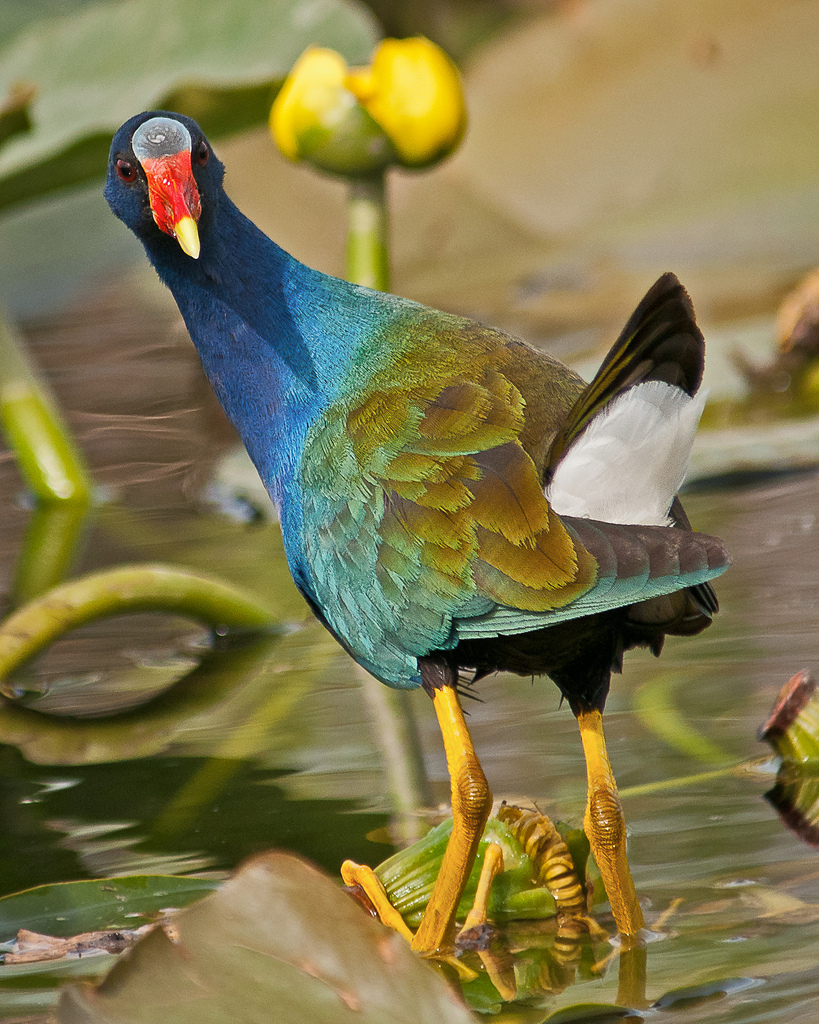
purple gallinule

A purple gallinule picks its way among water lilies in bud at Loxahatchee National Wildlife Refuge, FL on Jan. 23, 2012